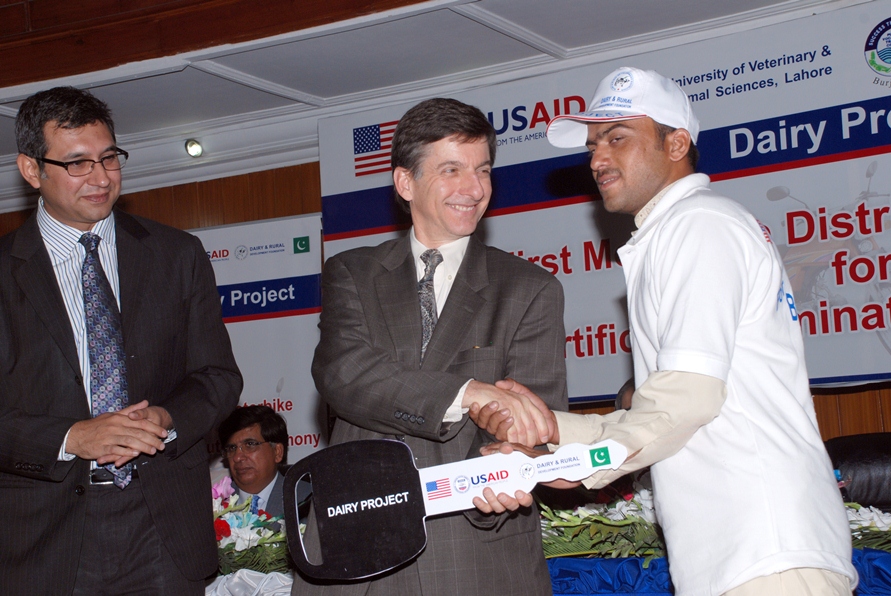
USAID Mission Director Dr. Andrew Sisson presenting motorcycle keys to a successfull AI technician 1